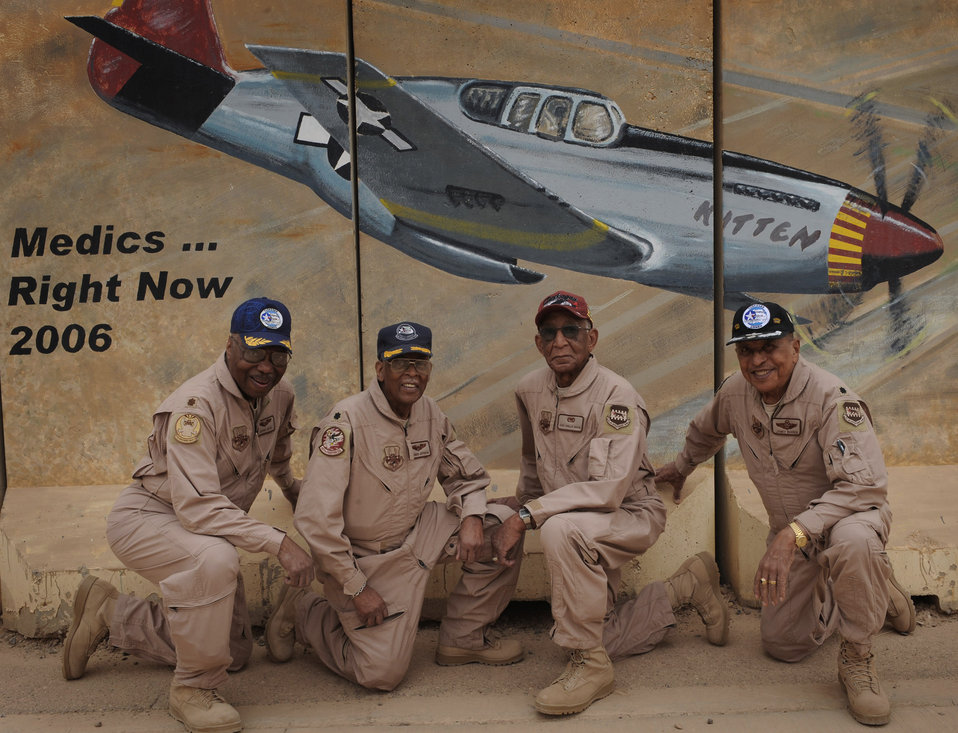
Tuskegee Airmen ... the legacy continues

Tuskegee Airmen, retired Major George Boyd (from left), retired Lt. Col. Alexander Jefferson, former Staff Sgt. Phillip Broome and retired Lt. Col. James Warren, pose April 24 in front of barrier art here showing a